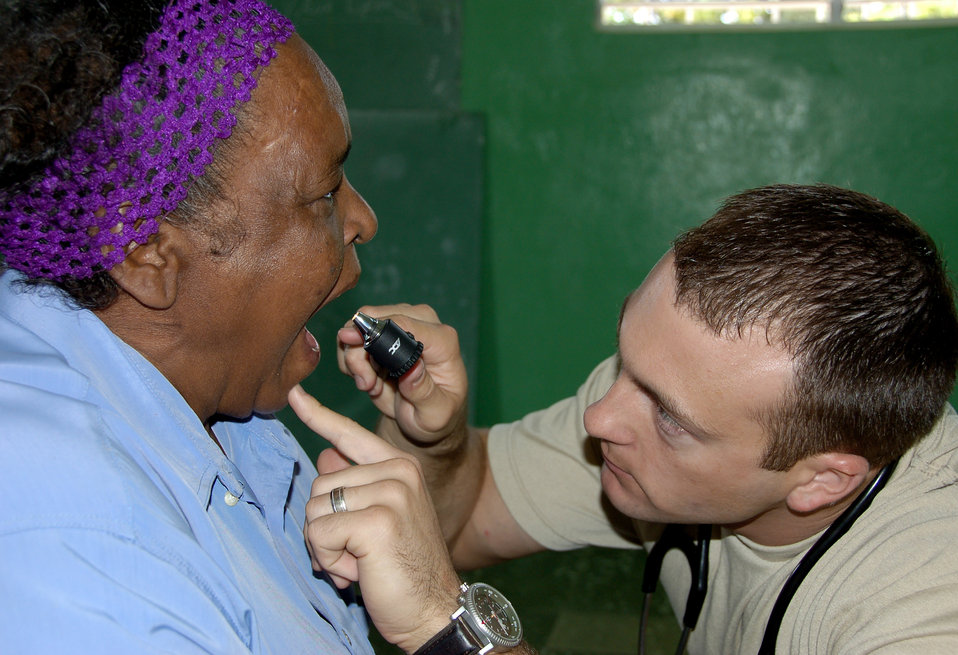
Medics provide care to people in Dominican Republic

1st Lt. John A. Vann performs an examination on a patient at a primary school turned temporary clinic April 22 in Hostos, Dom. Rep., during the medical readiness exercise, Beyond the Horizon 2009 - Caribbean. The medics treated 2,800 patients during the first three days of the U.S. Southern Command sponsored MEDRETE. Lieutenant Vann is a physician assistant from the 42nd Medical Group at Maxwell AFB, Ala.